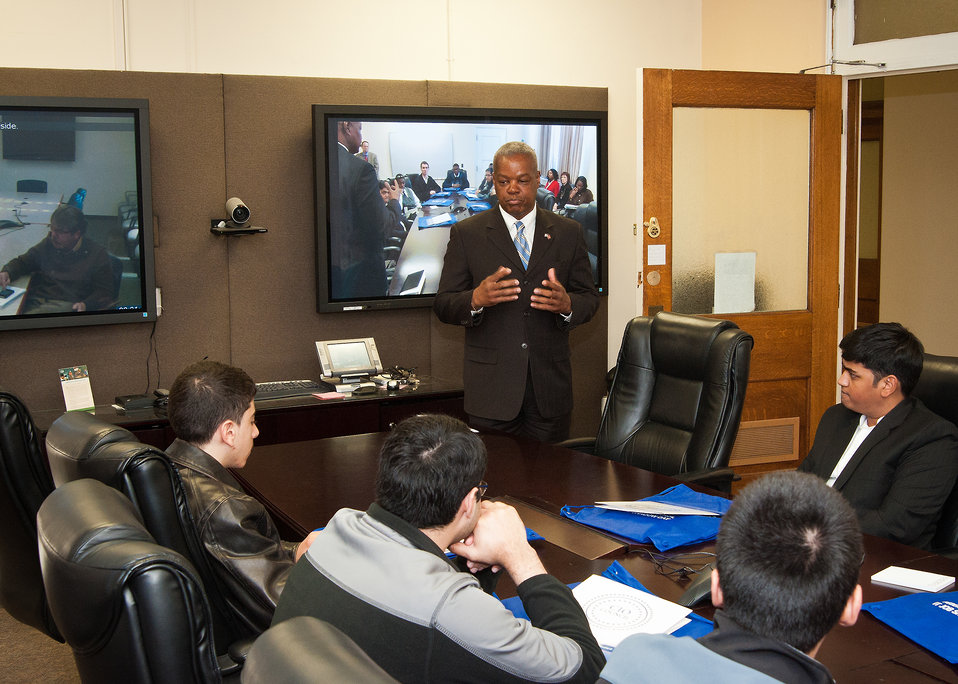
U.S. Department of Agriculture (USDA) Office of Chief Information Officer (OCIO) Deputy Chief Information Officer for Policy Charles McClam explains the depth and breadth of the information technology services to students from Edison Academy in Fairfax, VA during the annual USDA Information Technology (IT) Job Shadow Day held by the OCIO to introduce local high school students to careers in information technology in Washington, D.C. on Tuesday, Apr. 2, 2013.